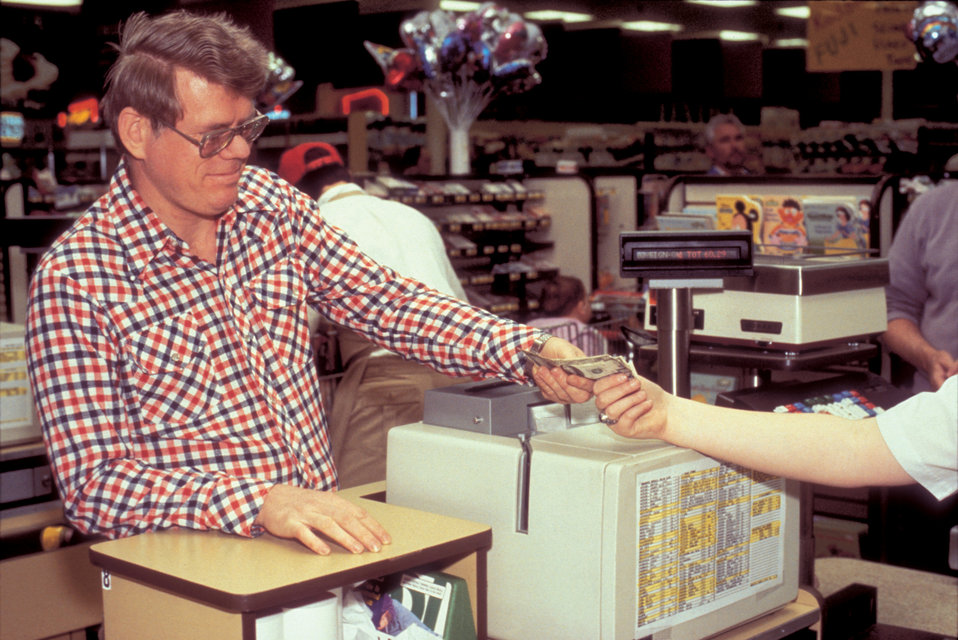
In the checkout line, this man with a cognitive disability was photographed while paying for his groceries. He was able to see the amount on the register's digital display, have it spoken by the cashier, and finally, received a receipt. Providing information in multiple modes is helpful for nonnative speakers, children, people with cognitive disabilities, older adults, and people with sensory reduction, while appealing to the human variation in learning and processing styles in the general population. See PHIL 9102 for an image depicting this man while shopping in this grocery store.